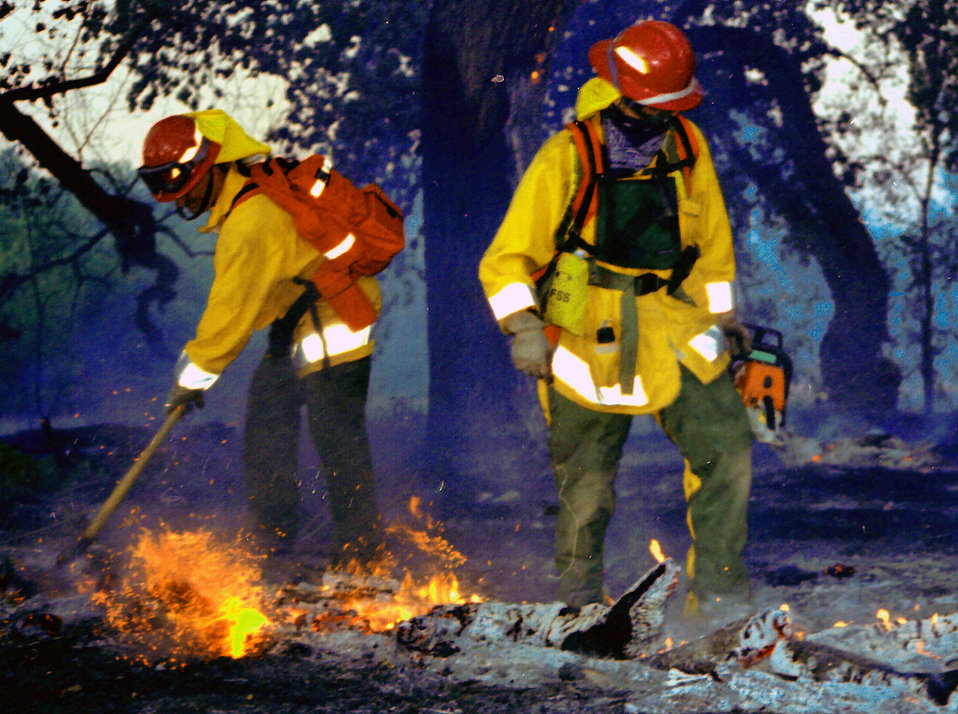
Along the Rio Grande

ALBUQUERQUE, N.M. -- Micheal Paul (left) and Chris Bortz joined 100 local firefighters fighting the blaze in the Albuquerque Bosque along the Rio Grande on June 24. The firefighters were among more than 30 sent from Kirtland Air Force Base to help as part of a mutual-aid agreement. In two days, nearly 1,500 acres burned and approximately 1,000 people were evacuated from their homes and businesses.